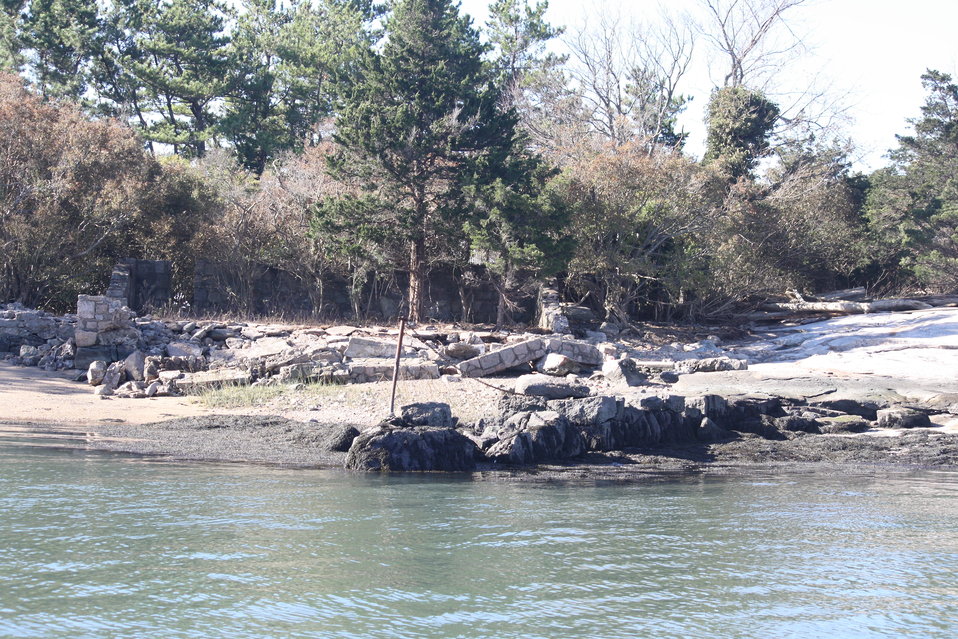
Damage at Stewart B. McKinney National Wildlife Refuge (CT)

Approaching Outer Island, which was damaged by Hurricane Sandy. Concrete debris was littered across the island after the storm.